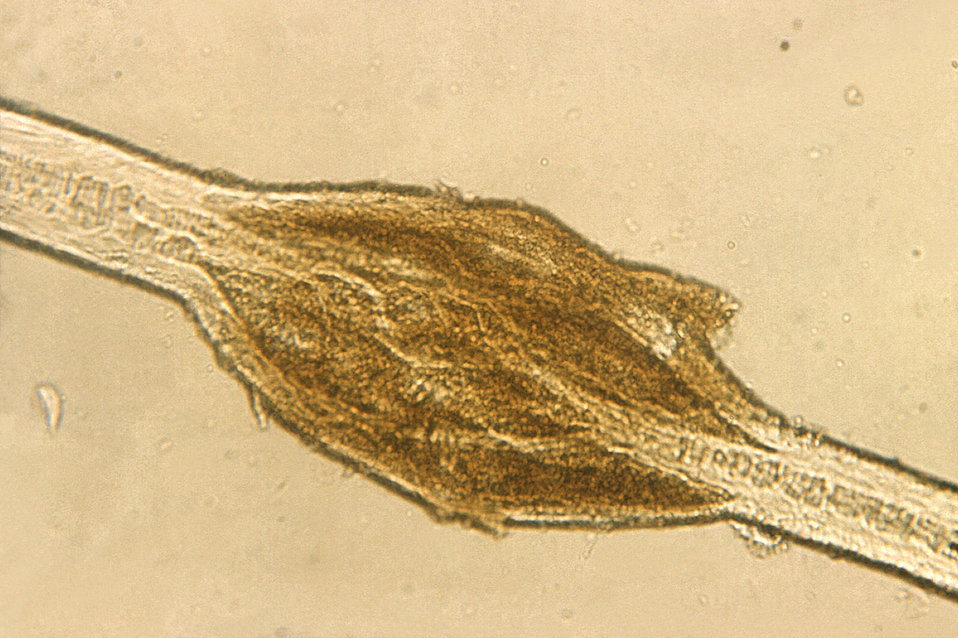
Under a relatively-low magnification of 100X, this photomicrograph reveals some of the pathologic morphology displayed by a primate hair shaft indicative of the disease known as, 'black piedra', also known as 'trichosporosis', which is caused by the fungal organism, Piedraia hortae.